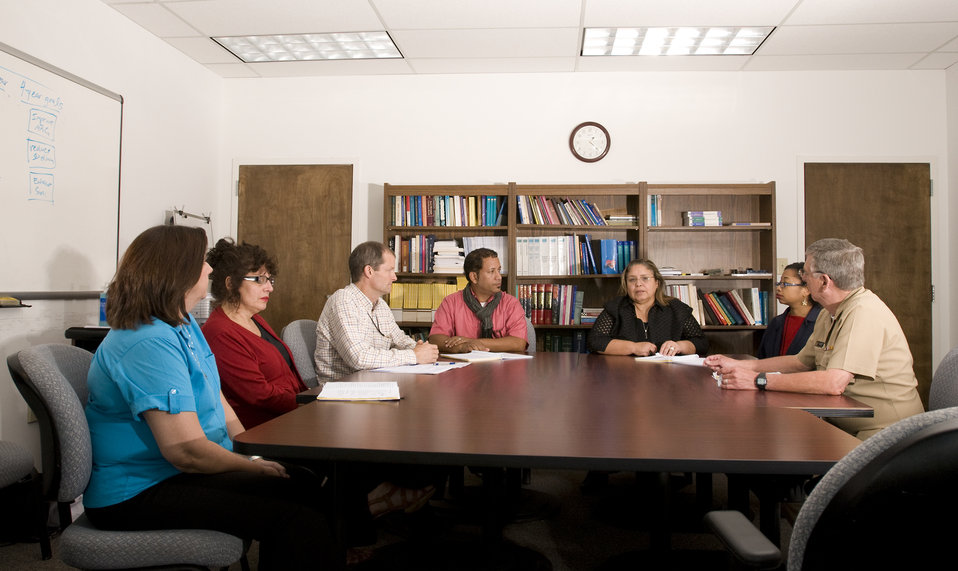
This image depicts a group of healthcare workers seated at a table discussing a strategy they would be implementing, which would guide them through an instructional campaign centered on the education of the diabetic patient to the healthy lifestyle one must implement in order to maintain control over the detrimental effects of this disease.